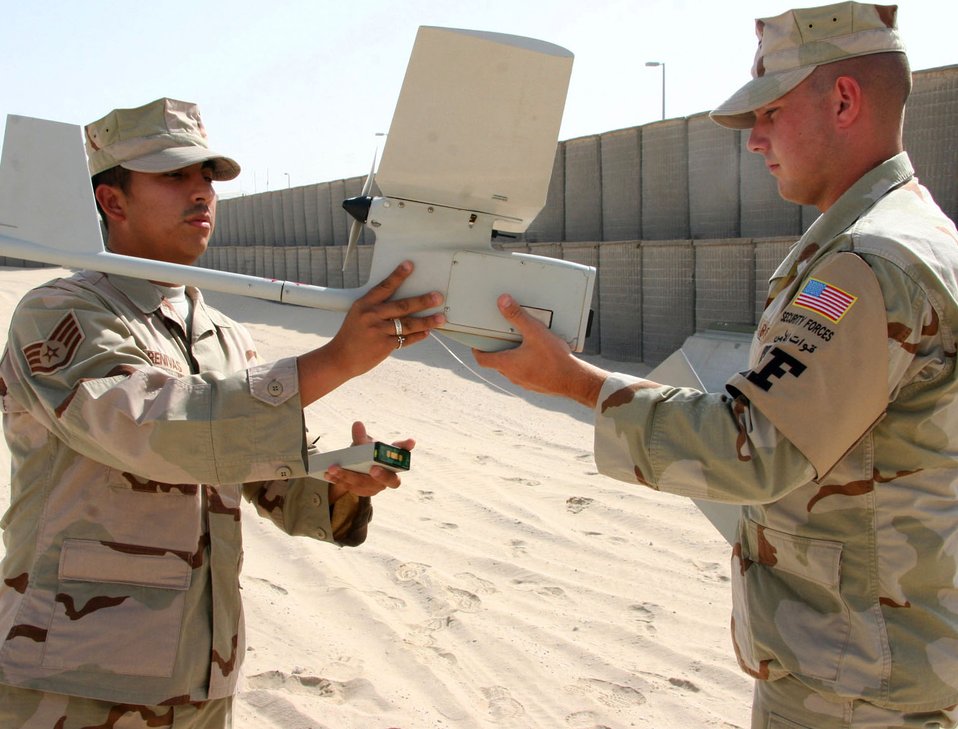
Raven B has landed in Southwest Asia

Staff Sgt. Karlo Arenivas (left) and Airman 1st Class James Gould demonstrate how the Raven B, a small unmanned aerial vehicle, is readied for a new mission Oct. 6. Following a mission, when the Raven lands it often breaks into pieces. It is then recovered, repaired and readied for a new mission. The Airmen are force protection airborne surveillance system specialists with the 380th Expeditionary Security Force Squadron.